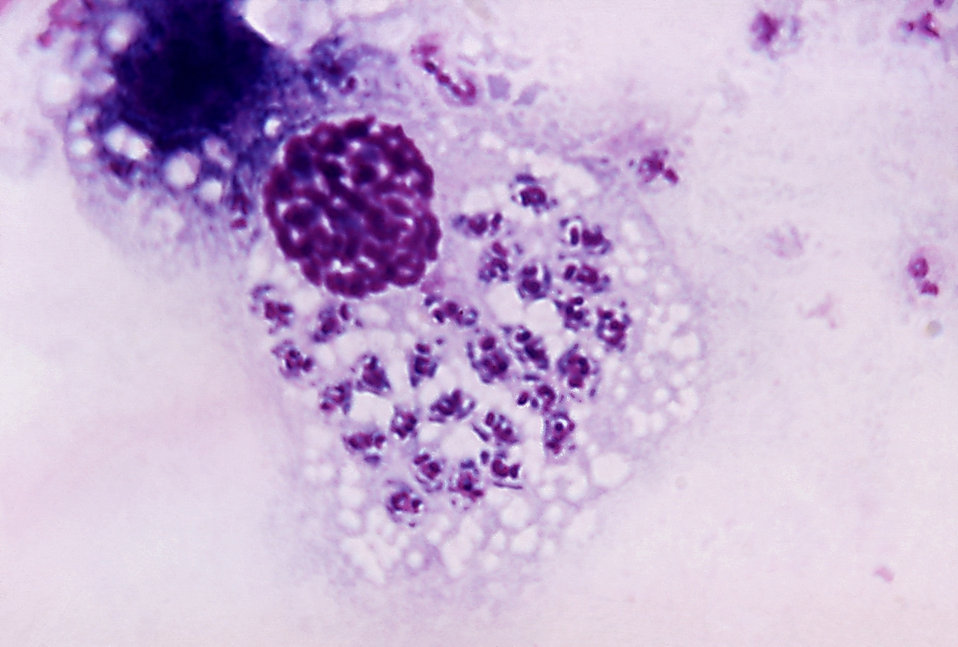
This Giemsa-stained micrograph shows a Trypanosoma cruzi protozoan parasite during its leishmanial stage of development.